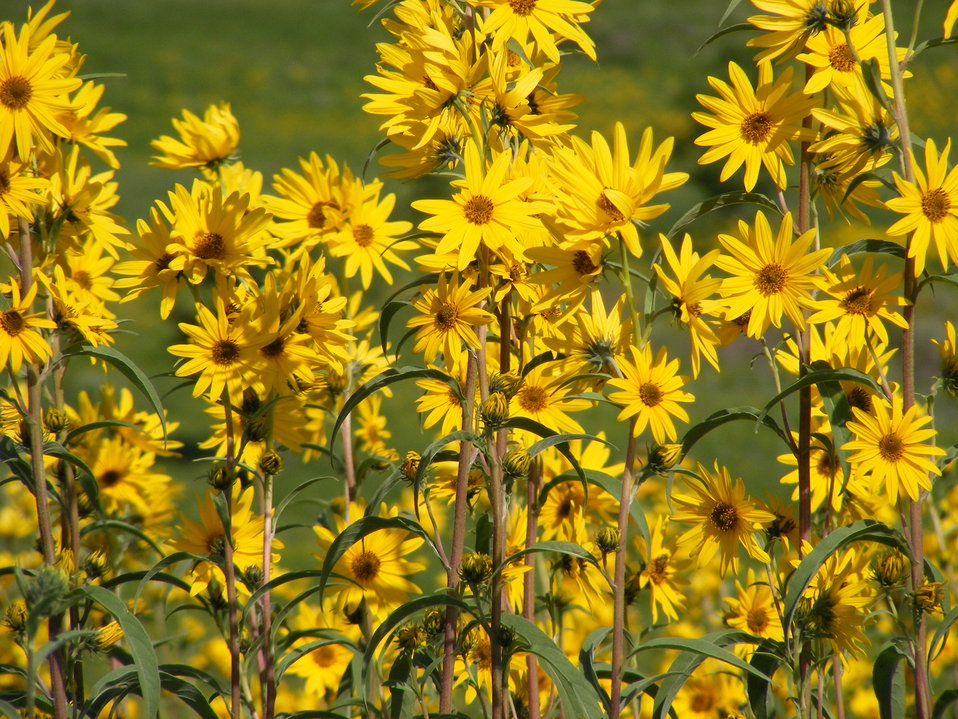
Maximillian Sunflowers Aglow in the Sun

Maximillian sunflowers responded well to a spring burn at Waubay National Wildlife Refuge.

Credit: Laura Hubers / USFWS, August 26, 2009